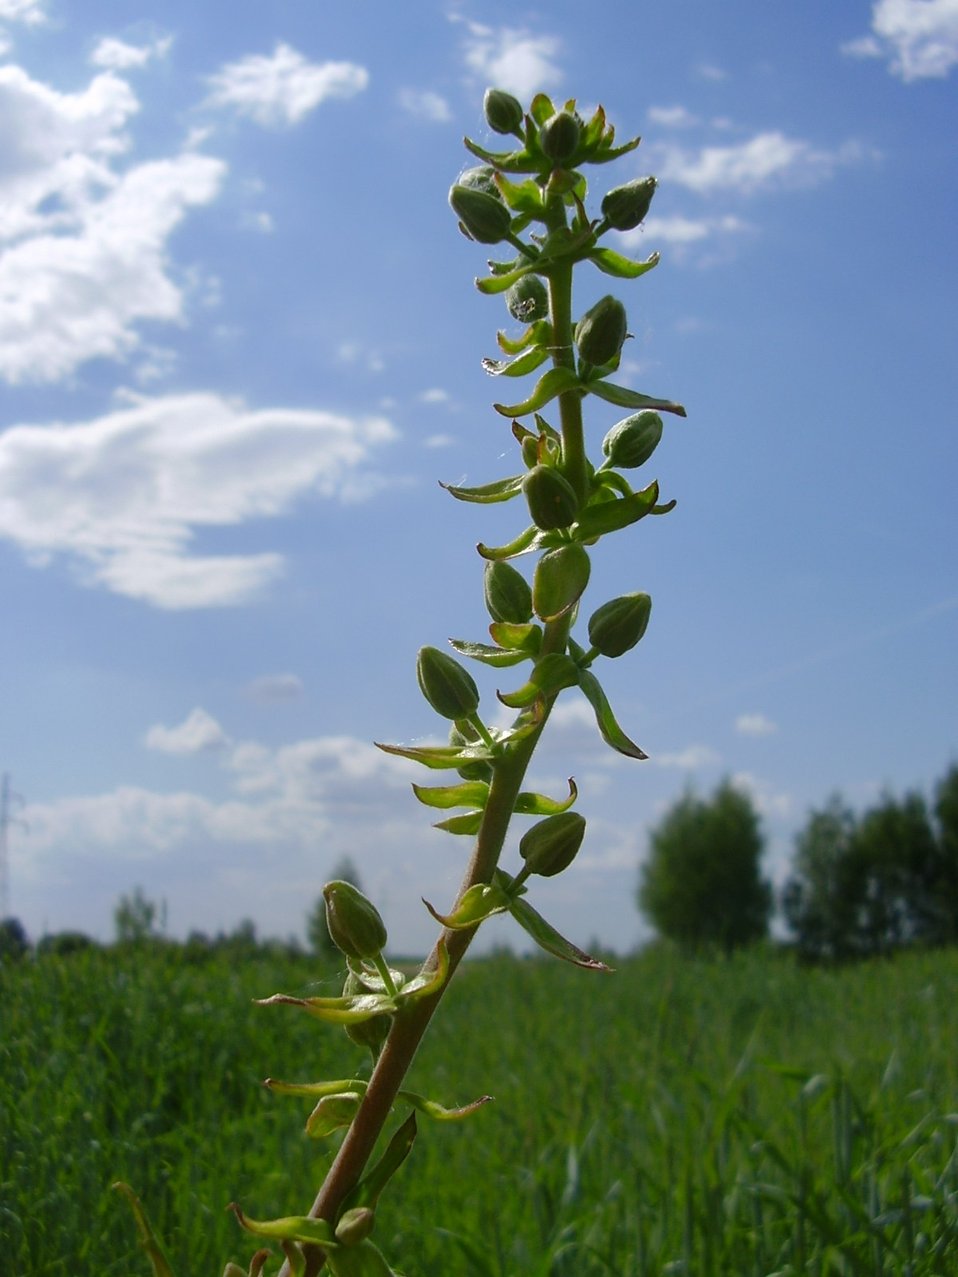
Polski: Kasztanek jarzębolistny.